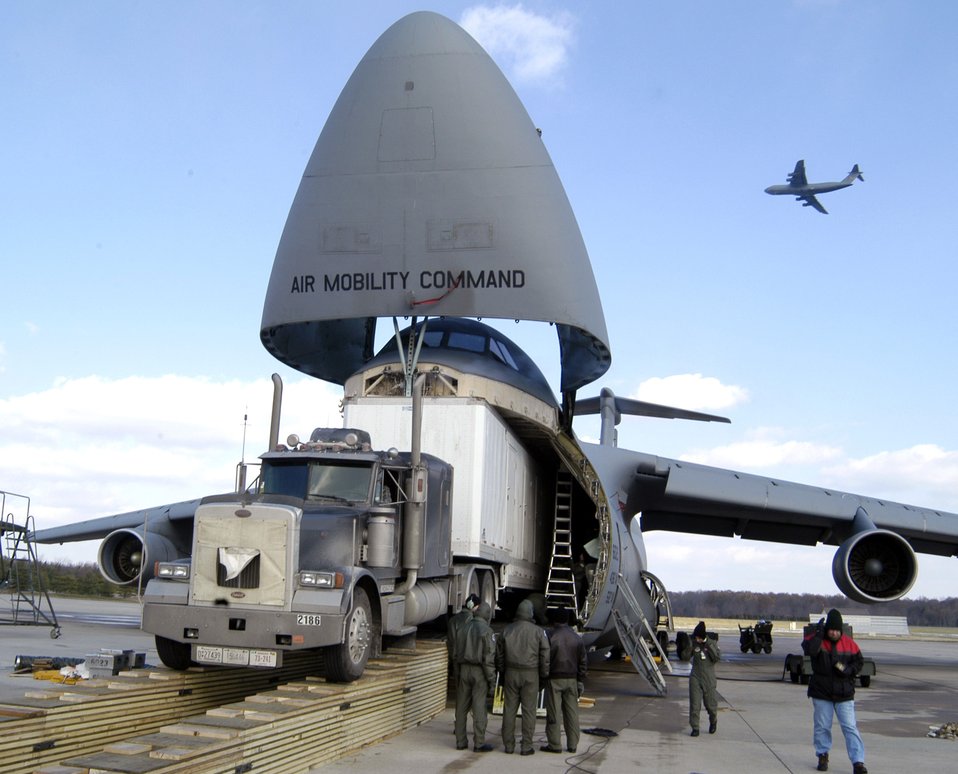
C-5 helps soldiers

DOVER AIR FORCE BASE, Del. (AFPN) -- Airmen load the Aviation Combined Arms Tactical Trainer onto a C-5 Galaxy with the help of Army contractors. The trainer is an Army helicopter training simulator. Airmen from the 436th Aerial Port Squadron built a ramp specially designed to load the trainer on the transport. Before the ramp's creation, the only way to move the trainer was by ship, which took six to eight weeks to get to Soldiers in the field.